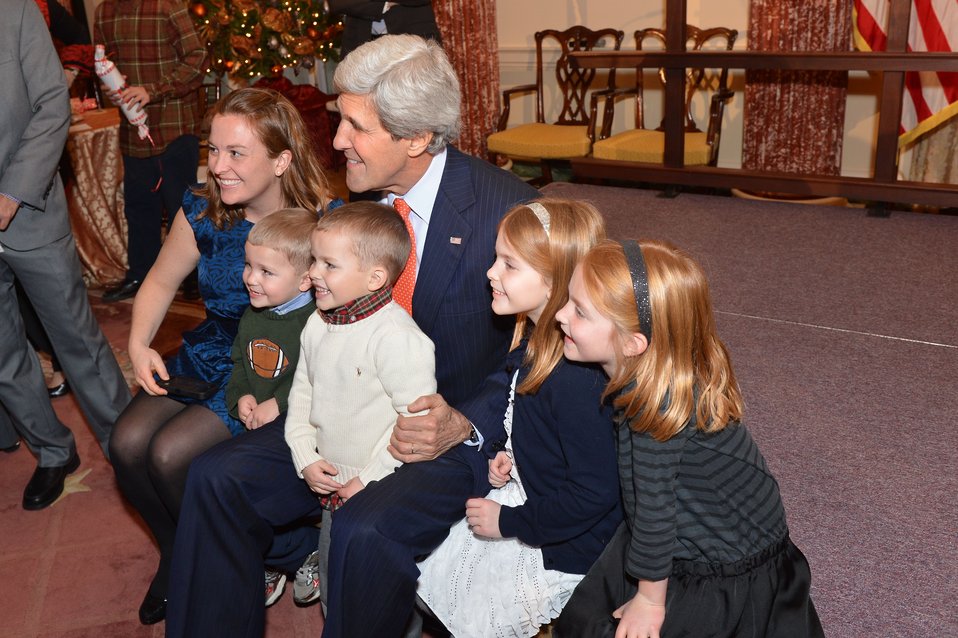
Secretary Kerry Hosts the Unaccompanied Tour Families Holiday Reception

U.S. Secretary of State John Kerry hosts the Unaccompanied Tour Families Holiday Reception at the U.S. Department of State in Washington, D.C., on January 7, 2013.